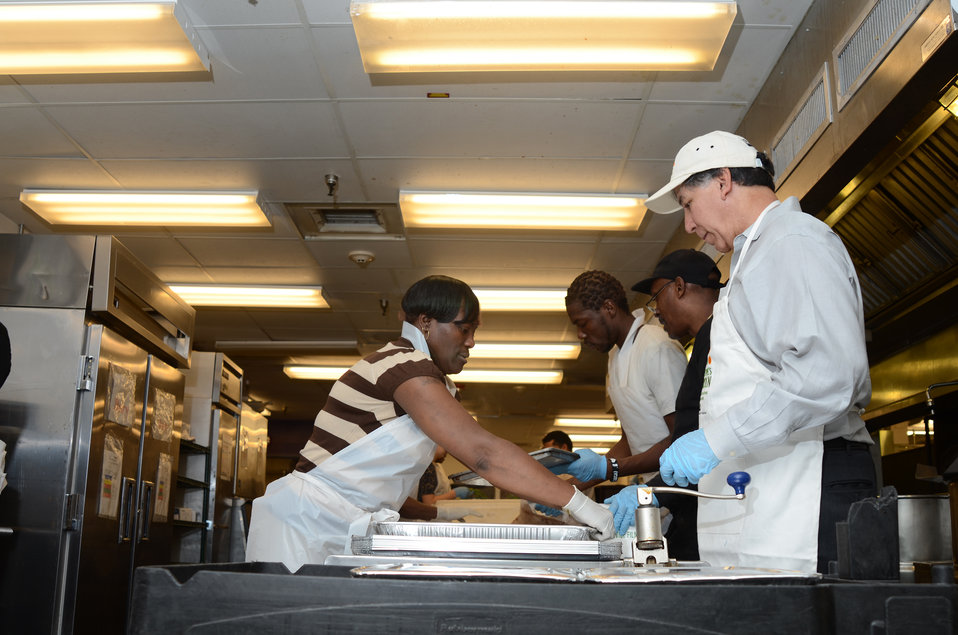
From right: Ed Avalos, Under Secretary for Marketing and Regulatory Programs and Pauline McBride, Rural Development help prepare the evening meal at the D.C. Central Kitchen during USDA’s National Service Day on January 12, 2012. NSD honors Dr. Martin Luther Kings’s contributions to the Civil Rights Movement. The D.C. Central Kitchen turns leftover food into millions of meals for thousands of at-risk individuals while offering nationally recognized culinary job training to once homeless and hungry adults.